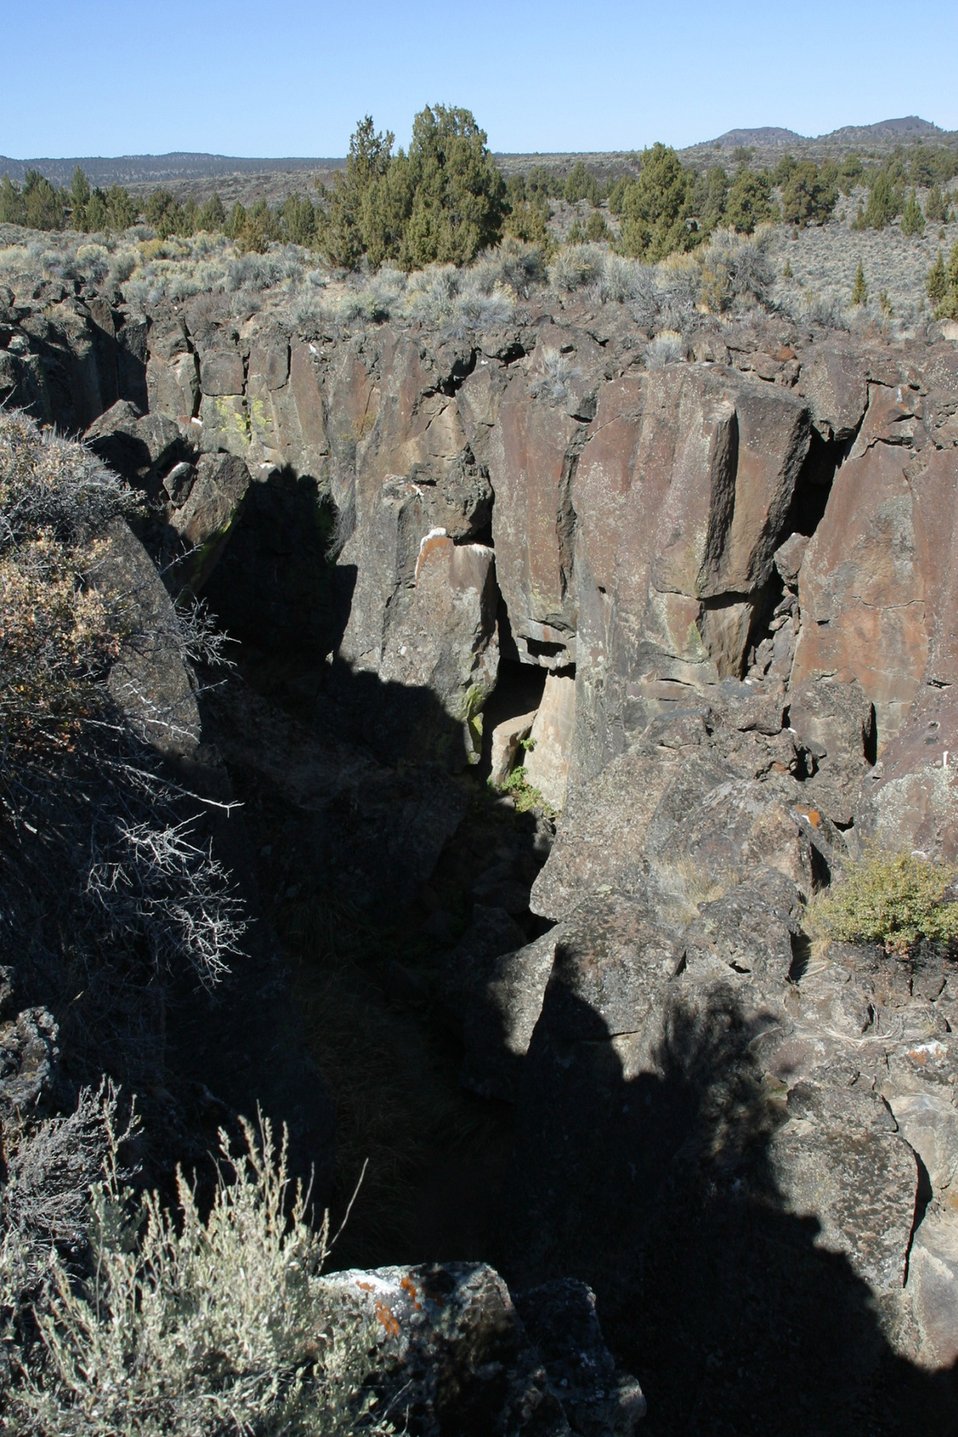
Ground level view of Crack-in-the-Ground, a lava fissure about 2 miles long and 70 feet deep. Crack-in-the-Ground is along BLM's Christmas Valley Back Country Byway in Central Oregon.